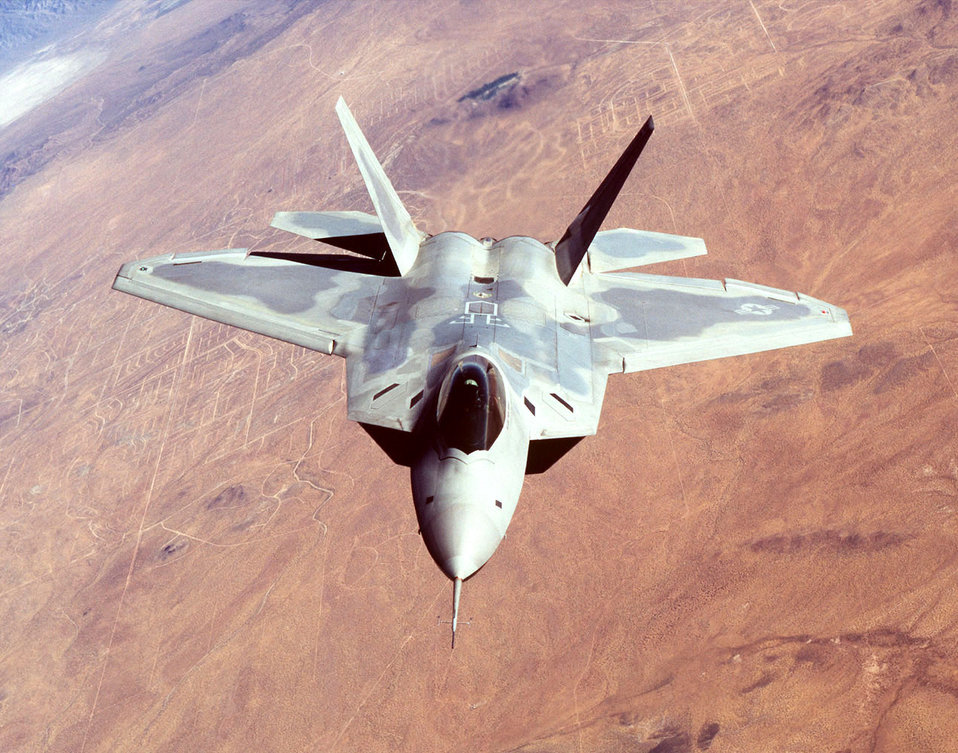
F/A-22 Raptor

FILE PHOTO -- The F/A-22 is an air-superiority fighter with improved capability over current Air Force aircraft. From the inception of the battle, the F/A-22's primary objective will be to establish air superiority through the conduct of counter air operations. The F/A-22 also has an inherent air-to-surface capability. A combination of improved sensor capability, improved situational awareness, and improved weapons provides first-kill opportunity against the threat.